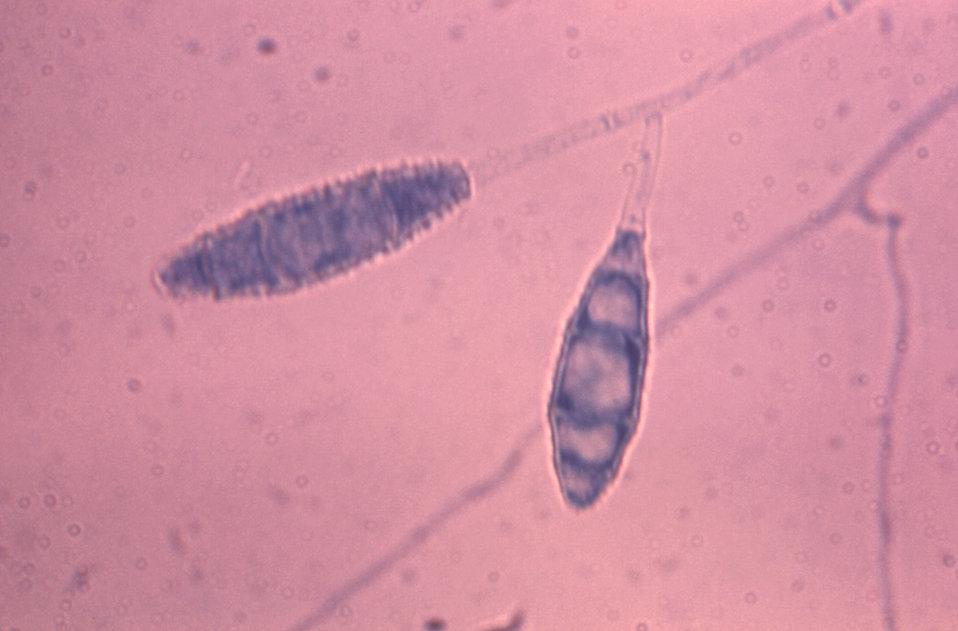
Under a high magnification of 900X, this photomicrograph depicted some of the ultrastructural features of two oblong-shaped Microsporum gypseum macroconidia.